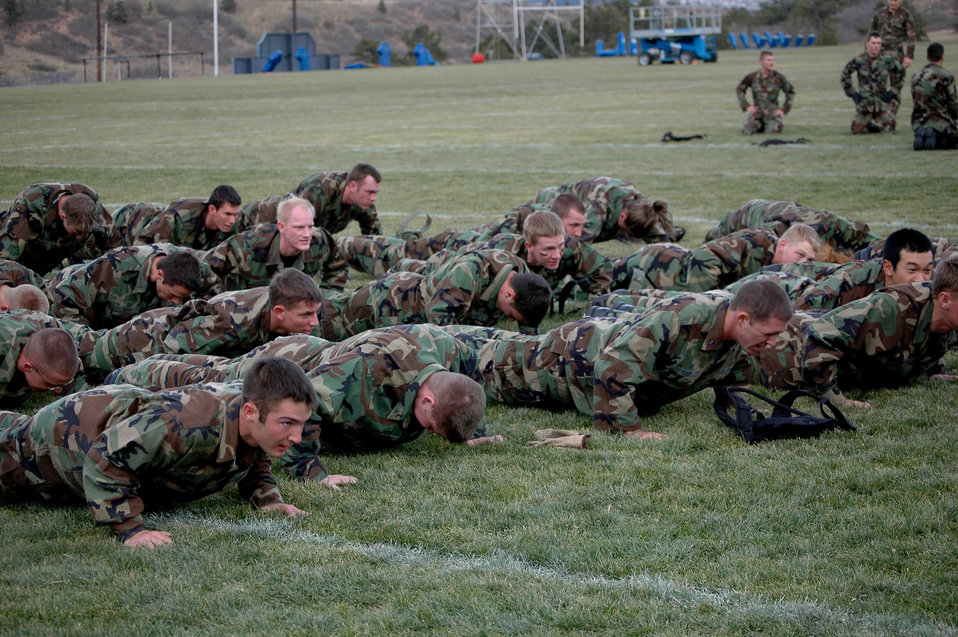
Academy conducts Commandant's Challenge 2006

Air Force Academy cadets do push ups at nearby Jacks Valley Nov. 19 during the annual Commandant's Challenge at the Academy in Colorado Springs, Colo.